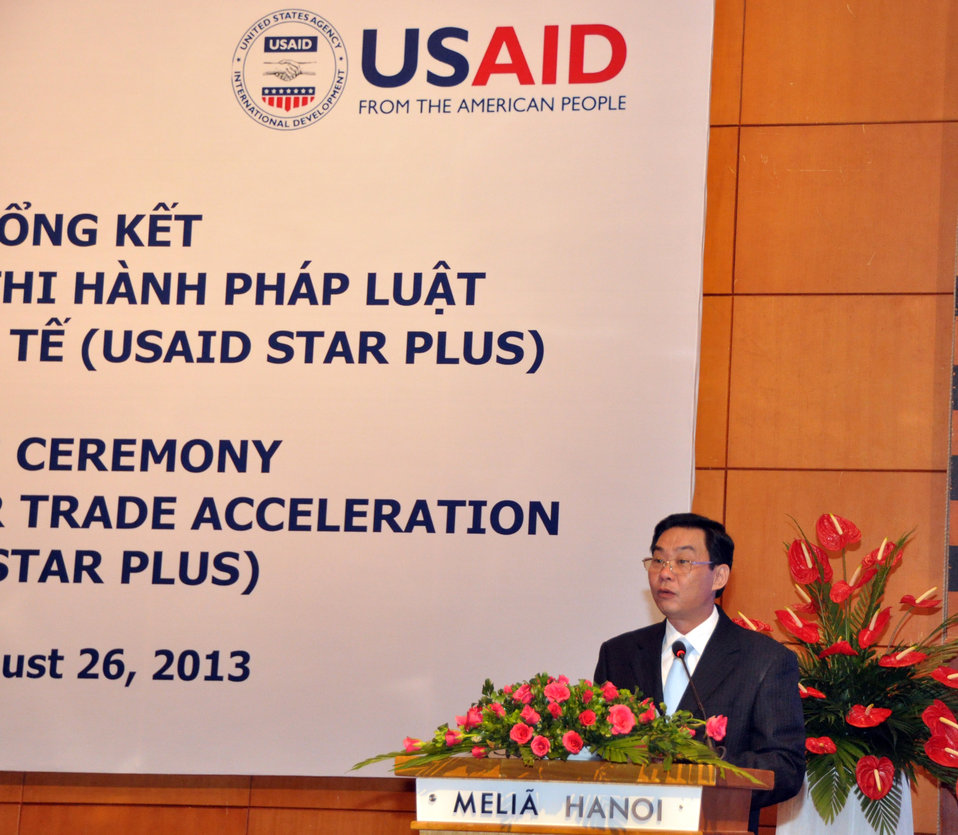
Vietnam's Vice Minister of Justice Le Hong Son speaks at the USAID's Support for Trade Acceleration Project (USAID STAR Plus) Closing Ceremony

Hanoi, August 26, 2013.